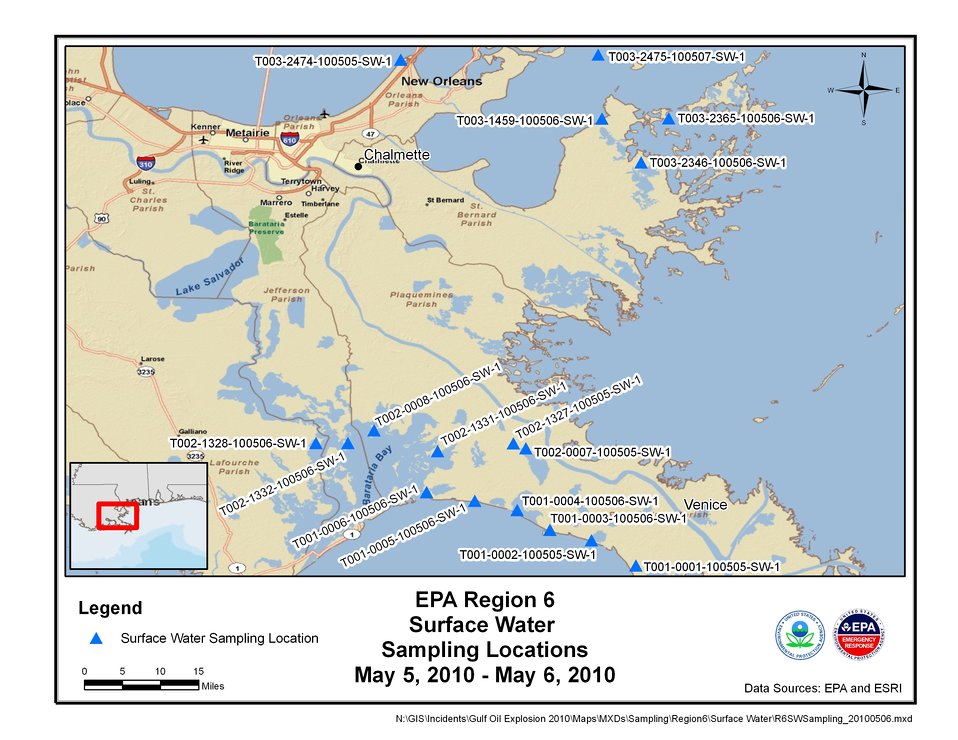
EPA Water Sampling Locations May 5-6, 2010